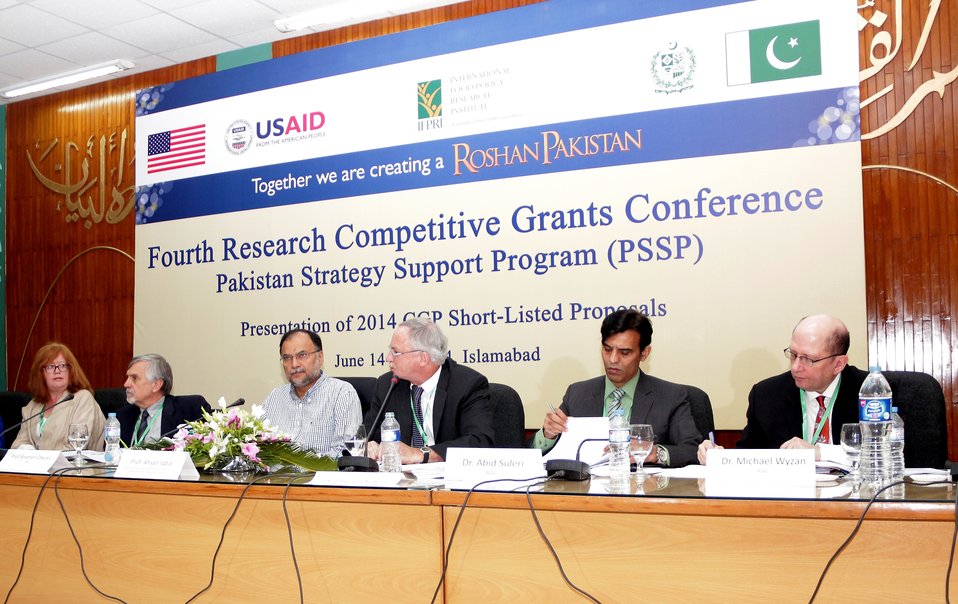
PSSP - CGP-IV Research Conference, June 14, 2014 (6)

Ms. Catherine Moore, Deputy Mission Director USAID-Pakistan, Prof. Stephen Davies, Chief of Party, Pakistan Strategy Support Program (PSSP), Prof. Ahsan Iqbal, Federal Minister for Planning, Development and Reforms, Dr. David Orden, Senior research Fellow, IFPRI, Dr. Abid Sulehri, Director SDPI and Dr. Michael Wyzan, EGA/USAID at the Inaugural Session of the Fourth Research Competitive Grants Conference organized by PSSP at the Planning Commission of Pakistan